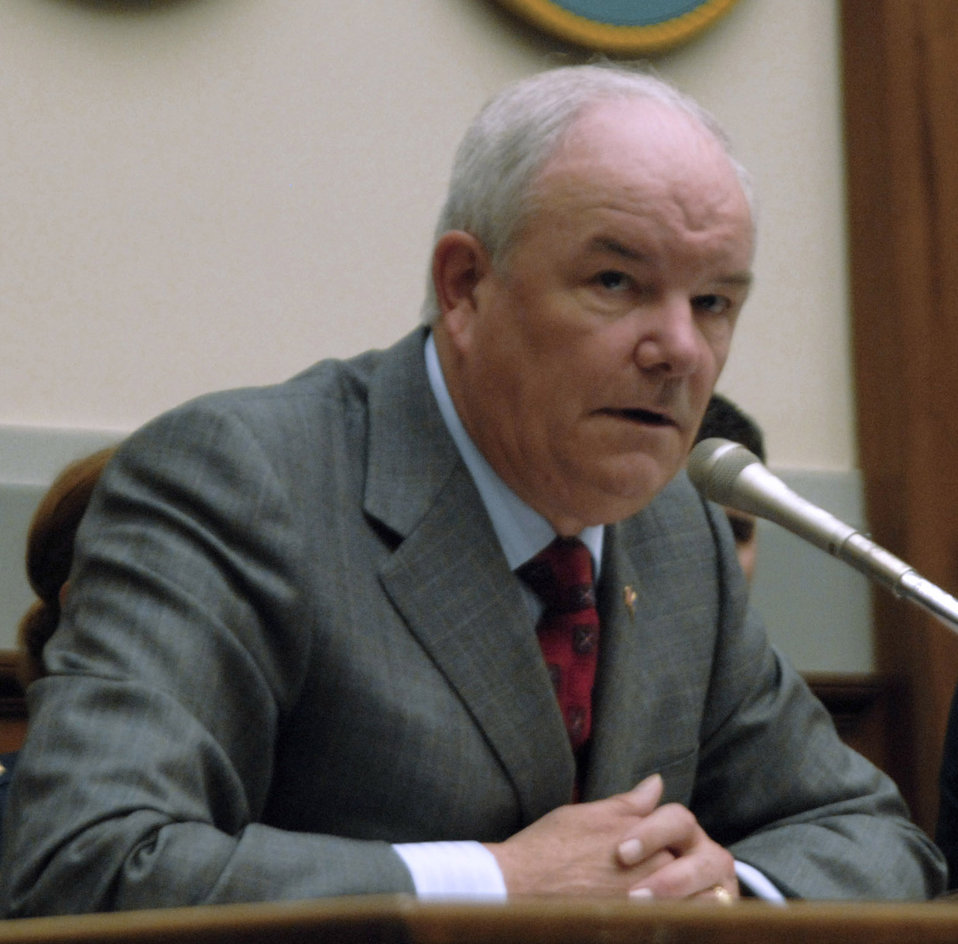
Resignation statement from the secretary of the Air Force

Secretary of the Air Force Michael W. Wynne made a statement June 5 announcing his plan to tender his resignation to Secretary of Defense Robert M. Gates.